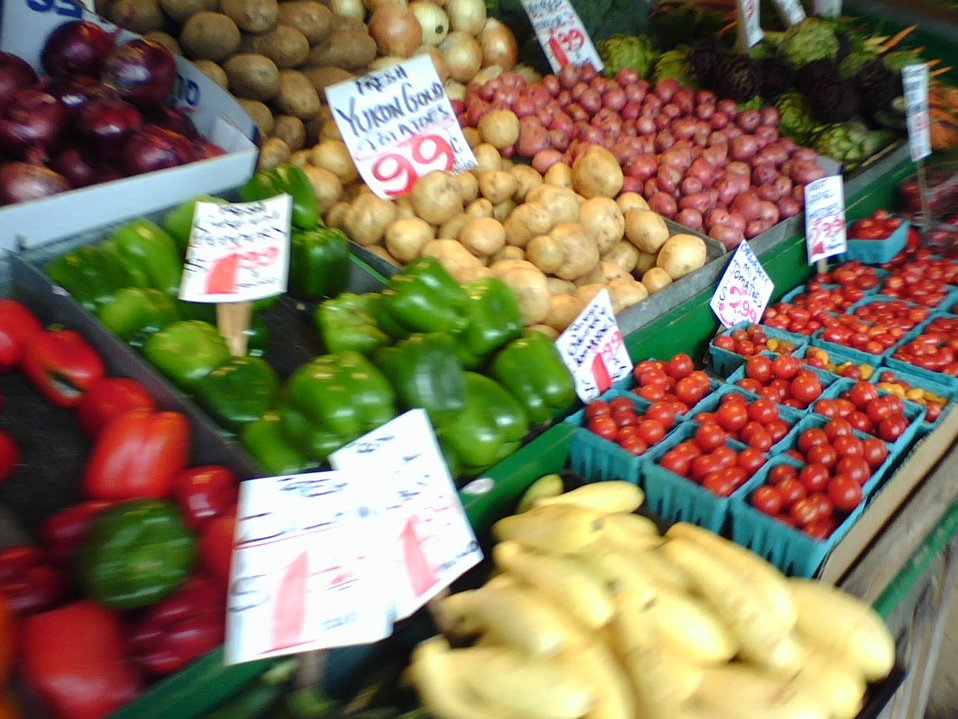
Picture taken by Spencer Lowe
Pike Place Market